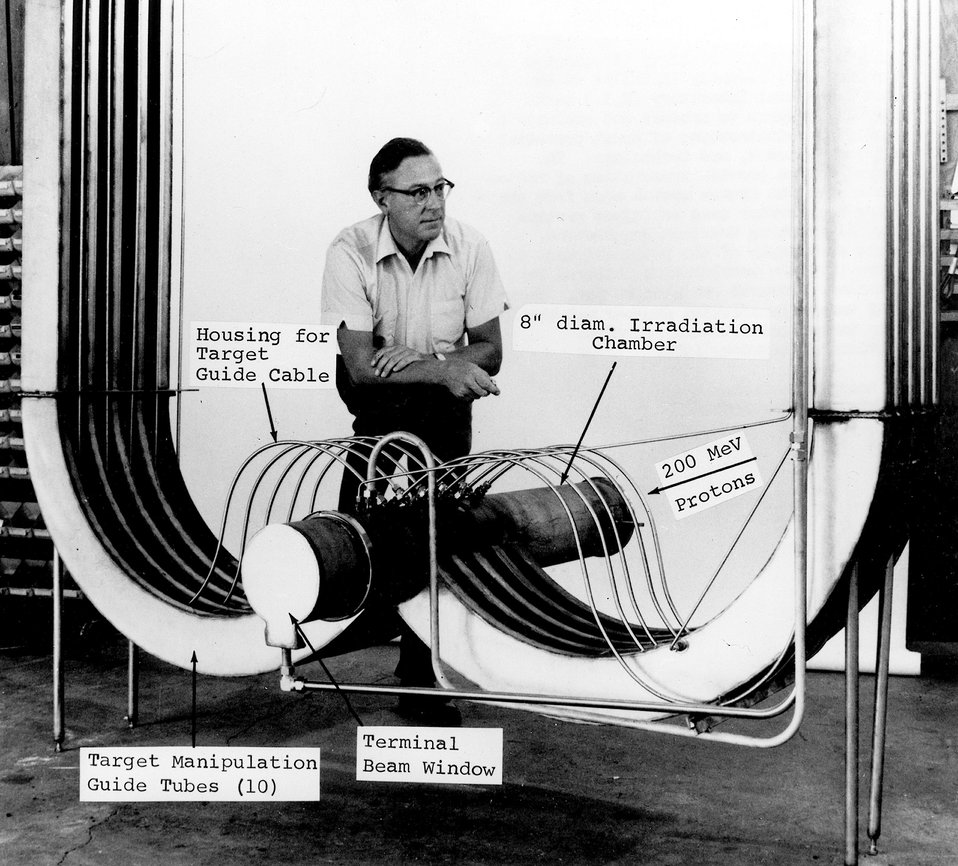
The 'BLIP' facility recently installed at the
AEC's Brookhaven National Laboratory marks
the beginning of a program to produce and evaluate a
whole new family of radioisotope of great potential
value in medicine, science, and technology.